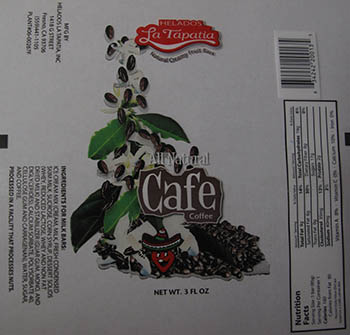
RECALLED – Ice cream products

March 19, 2014 – Product Recall – Helados La Tapatia, Inc. Recalls Products Because of Possible Health Risk.